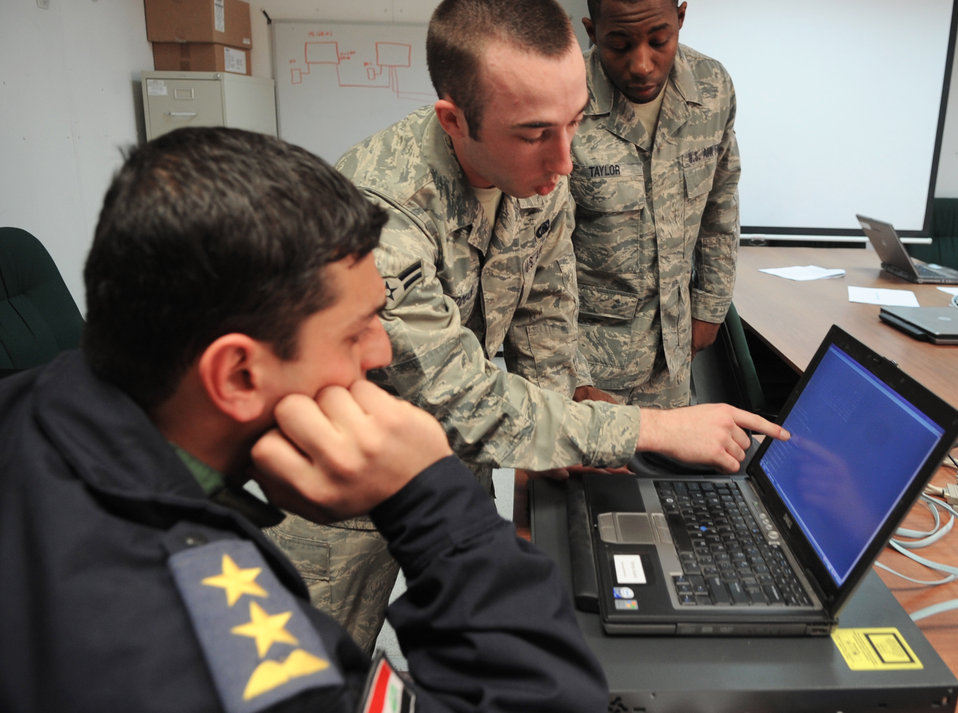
Airmen teach Iraqi counterparts networking skills

Iraqi air force members learn communication techniques from Senior Airman Andre Taylor and Airman 1st Class Chris Redman Jan. 30, 2010, at Kirkuk Air Base, Iraq. Airmen Taylor and Redman are from the 506th Expeditionary Communications Squadron.